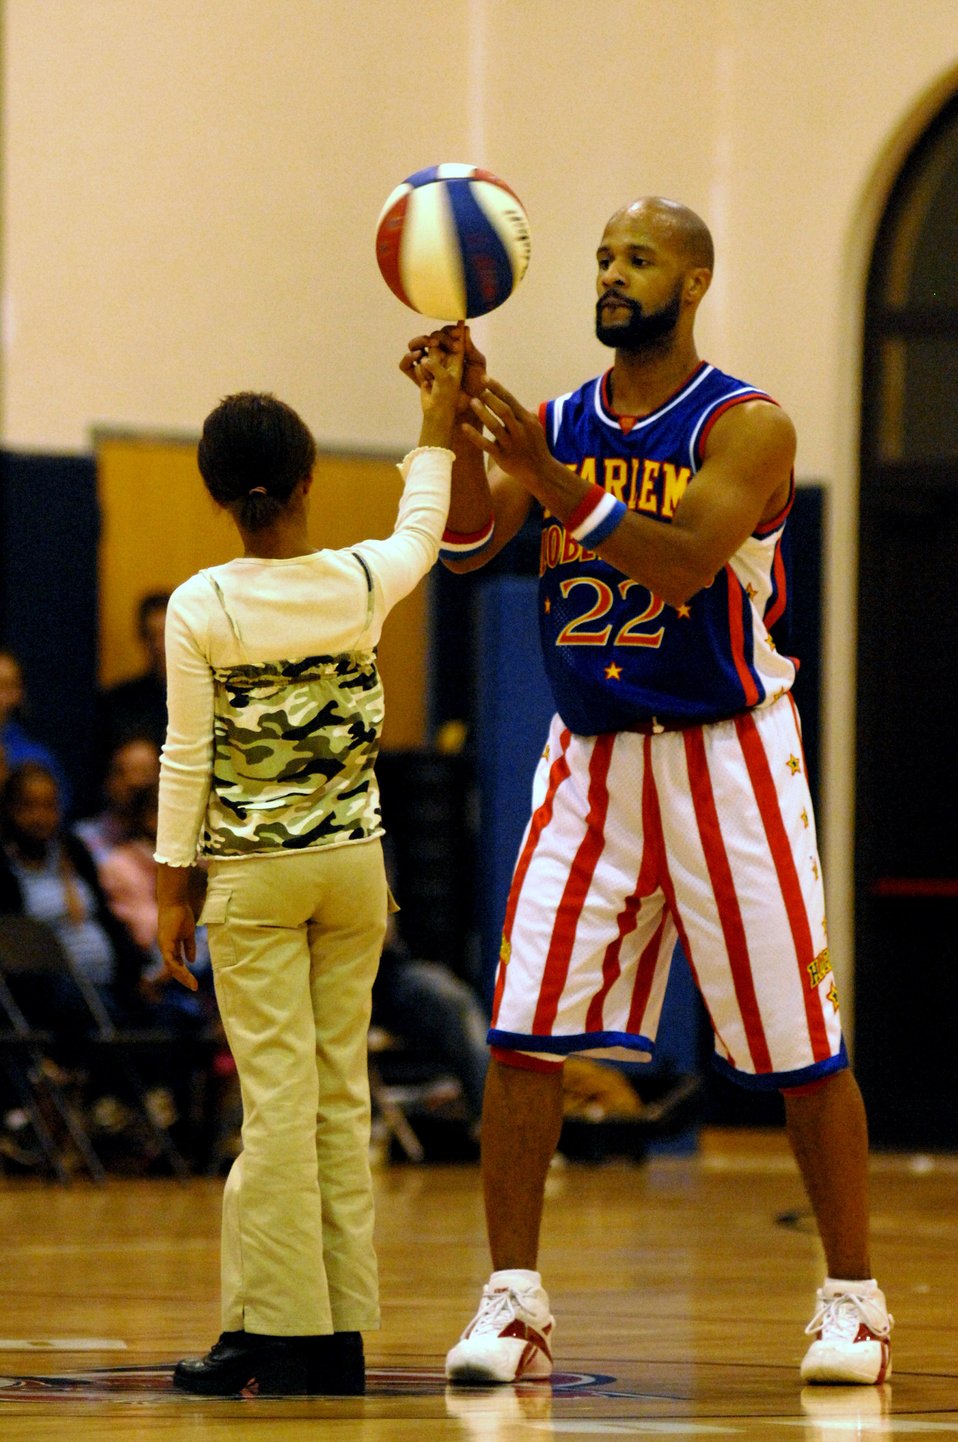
Harlem Globetrotters share the magic

Harlem Globetrotter